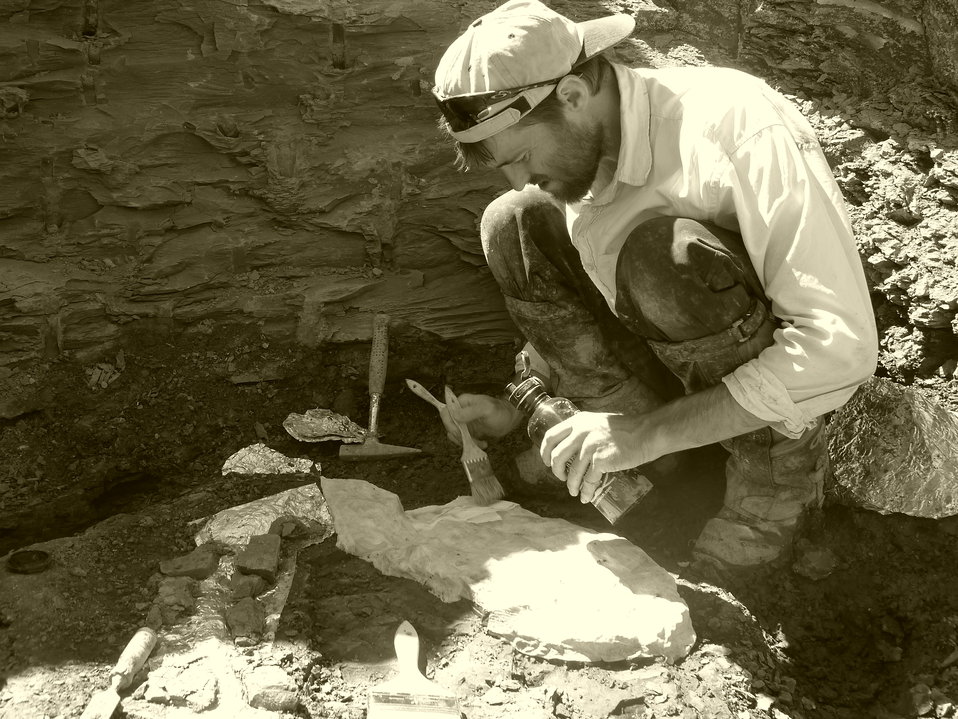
fossil dig at Charles M. Russell National Wildlife Refuge, MT

A paleontologist makes a plaster cast of an ancient plesiosaur fossil excavated at Russell Refuge in 2011.
Photo: Erin Clark, USFWS
2011 Wilderness Fellow